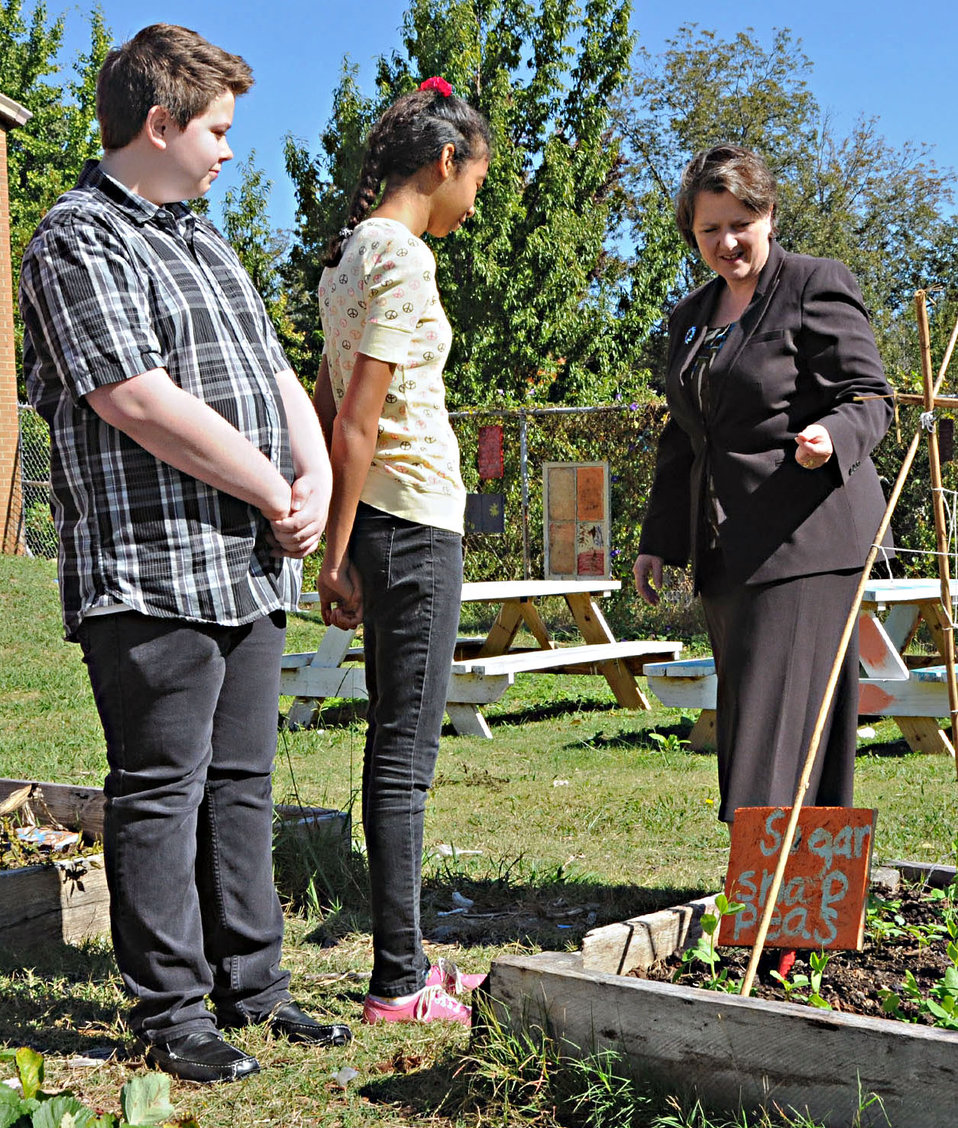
Agriculture Deputy Secretary Kathleen Merrigan gets a tour of the school garden from students during a visit Carl G. Renfroe Middle School in Decatur, Ga., during National School Lunch Week and Farm to School Month on Friday, October 14, 2011.